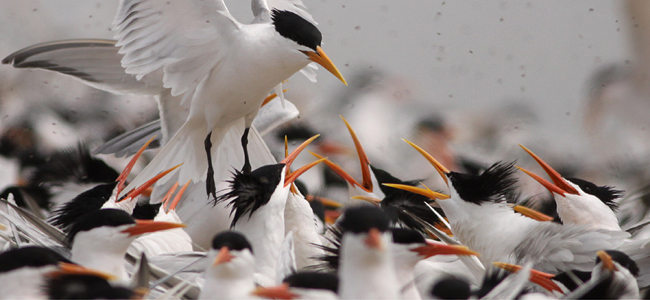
Elegant Terns at San Diego NWR